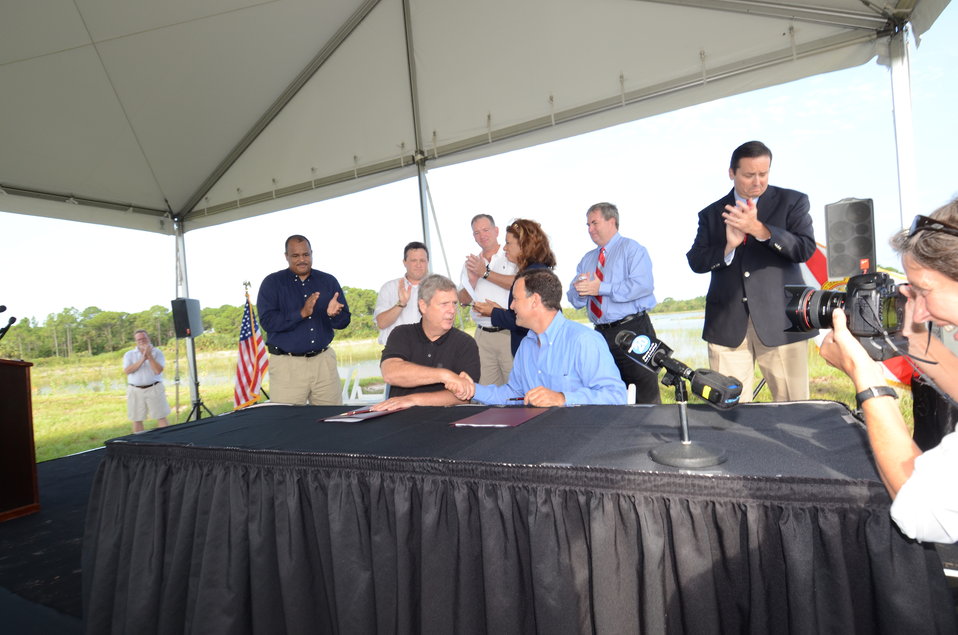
Agriculture Tom Vilsack participates in a signing ceremony in WEST PALM BEACH, Florida, August 11, 2011, with A.J. Suarez of Hendry County Nursery Farms-a landowner who will benefit from the $100 million in financial assistance to acquire permanent easements and assist with wetland restoration on nearly 24,000 acres of agricultural land in the Northern Everglades Watershed. Suarez signed an agreement with USDA to start the process to acquire the easement rights to 3,782 acres.